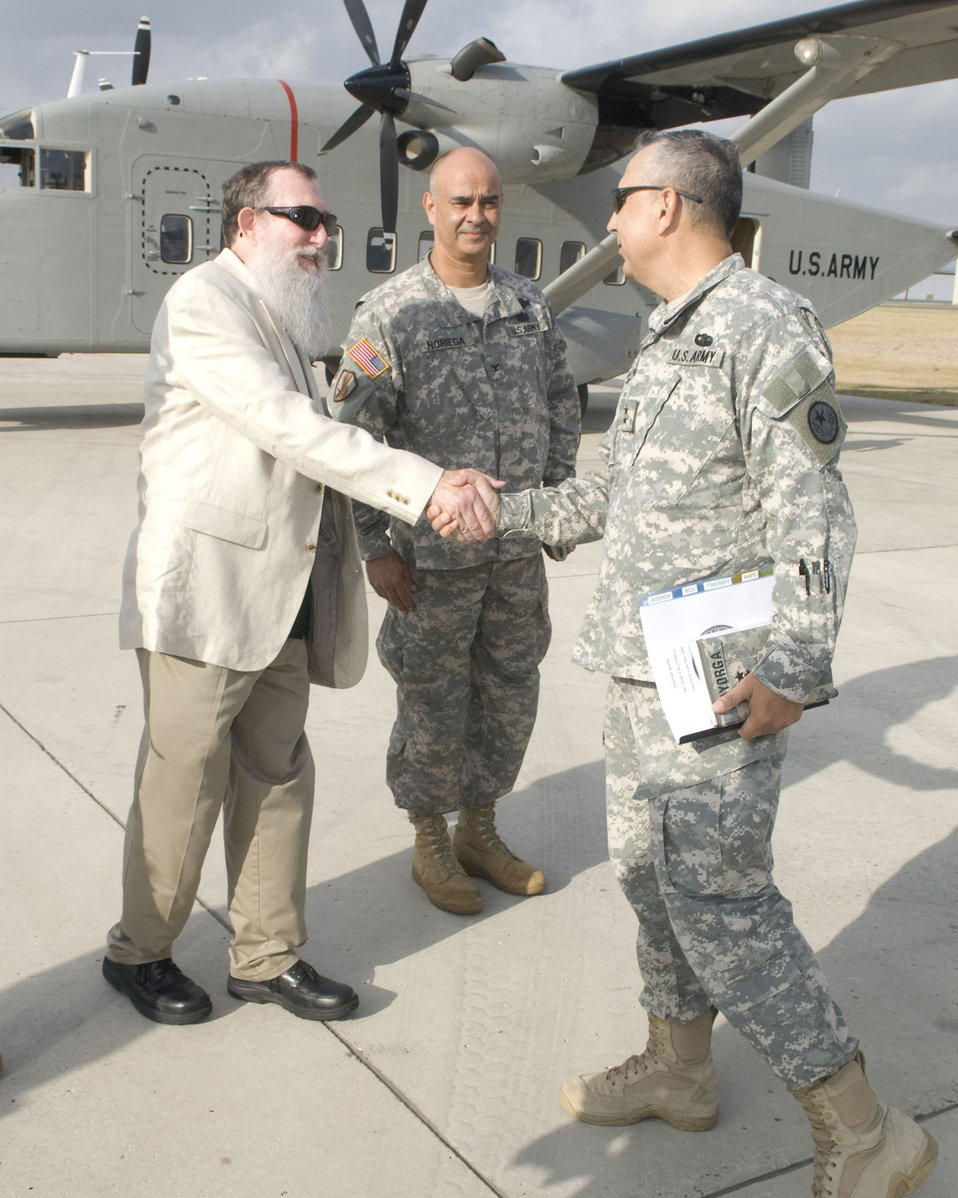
Operation Lone Star

Army Maj. Gen. Jose S. Mayorga, the Texas adjutant general, is greeted by Dr. Brian Smith and Army Col. Rick Noriega after arriving at McAllen Regional Airport July 30 en route to an Operation Lone Star media day at Pharr-San Juan-Alamo High School in Pharr, Texas. Operation Lone Star is a joint civilian/military medical mission offering free medical care to the region.